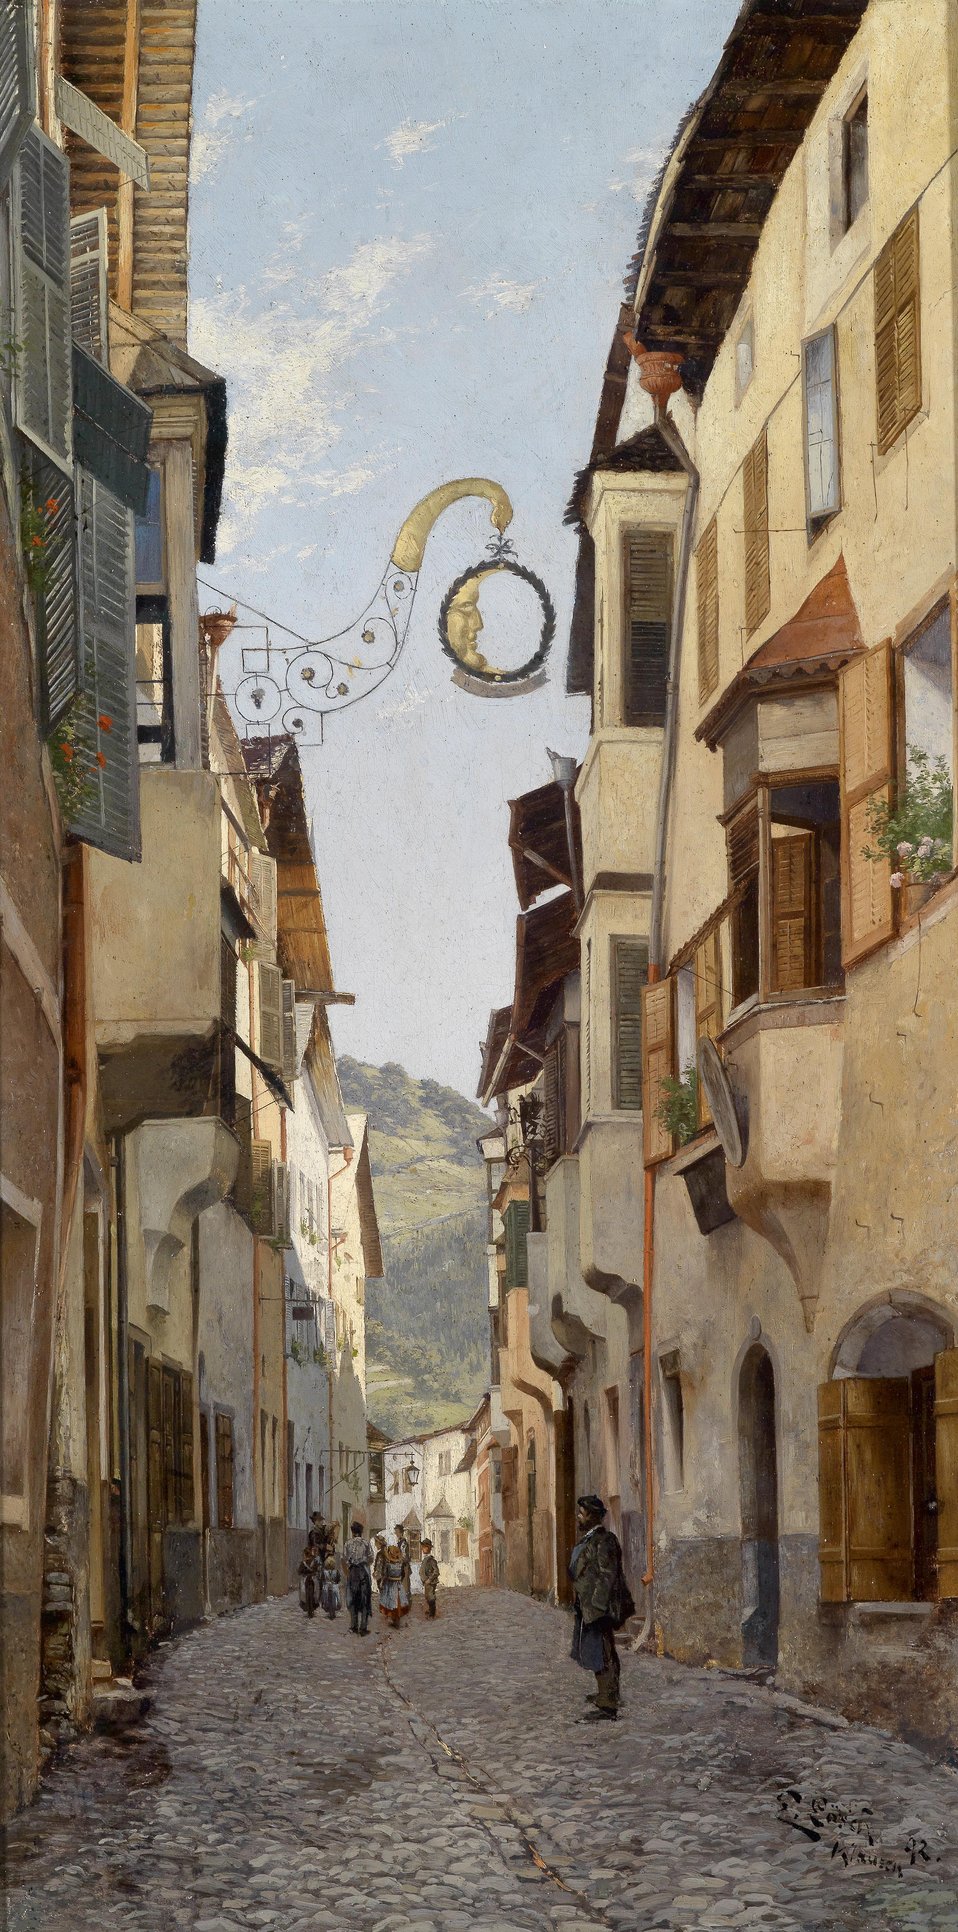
Kleine Gasse in Klausen, signiert, datiert, bezeichnet E. Lösch Klausen (18)92, Öl auf Leinwand, 70 x 36 cm